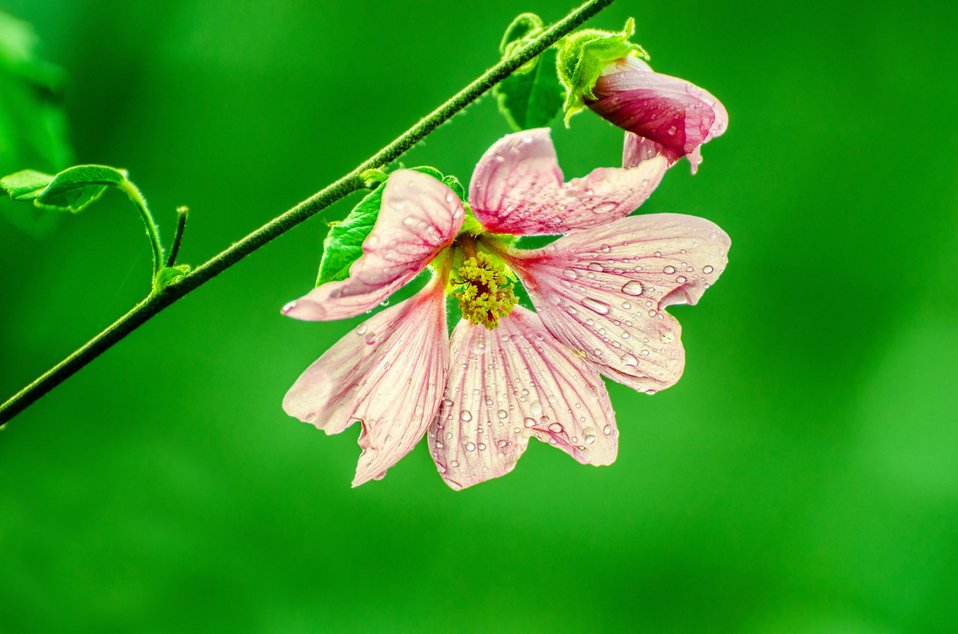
Flower on the green background.